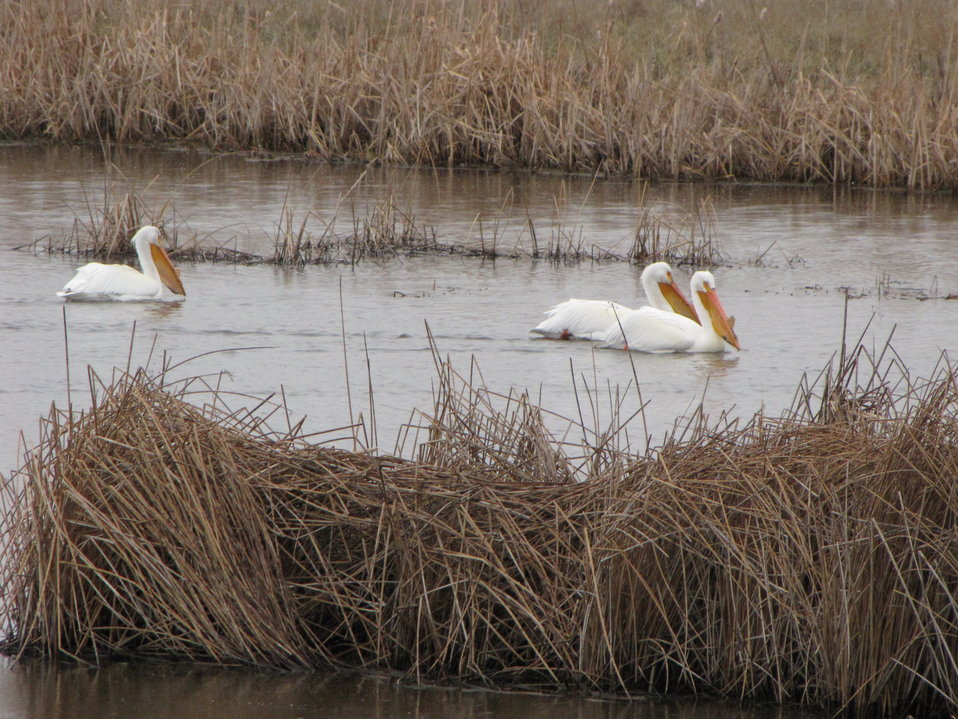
American White Pelicans

The rains and chilly weather didn't bother these three American white pelicans on the wetland in front of the Wildlife Education Center at Bear River Migratory Bird Refuge in Utah in April 2011.